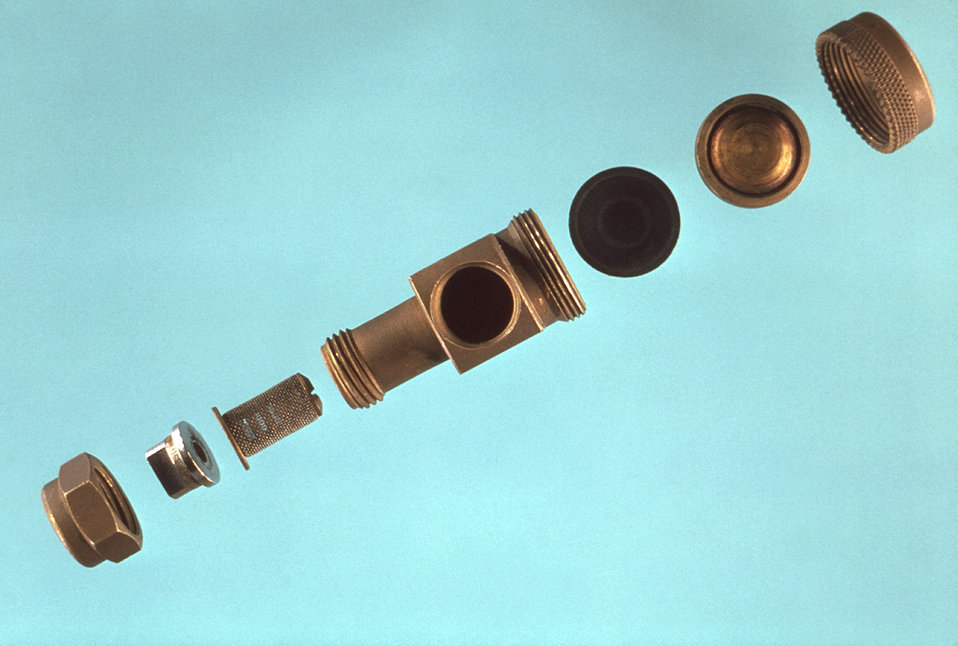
This photograph depicts an exploded view of a Beecomist System spray nozzle through which an ultra-low volume (ULV) insecticidal fog was dispersed.